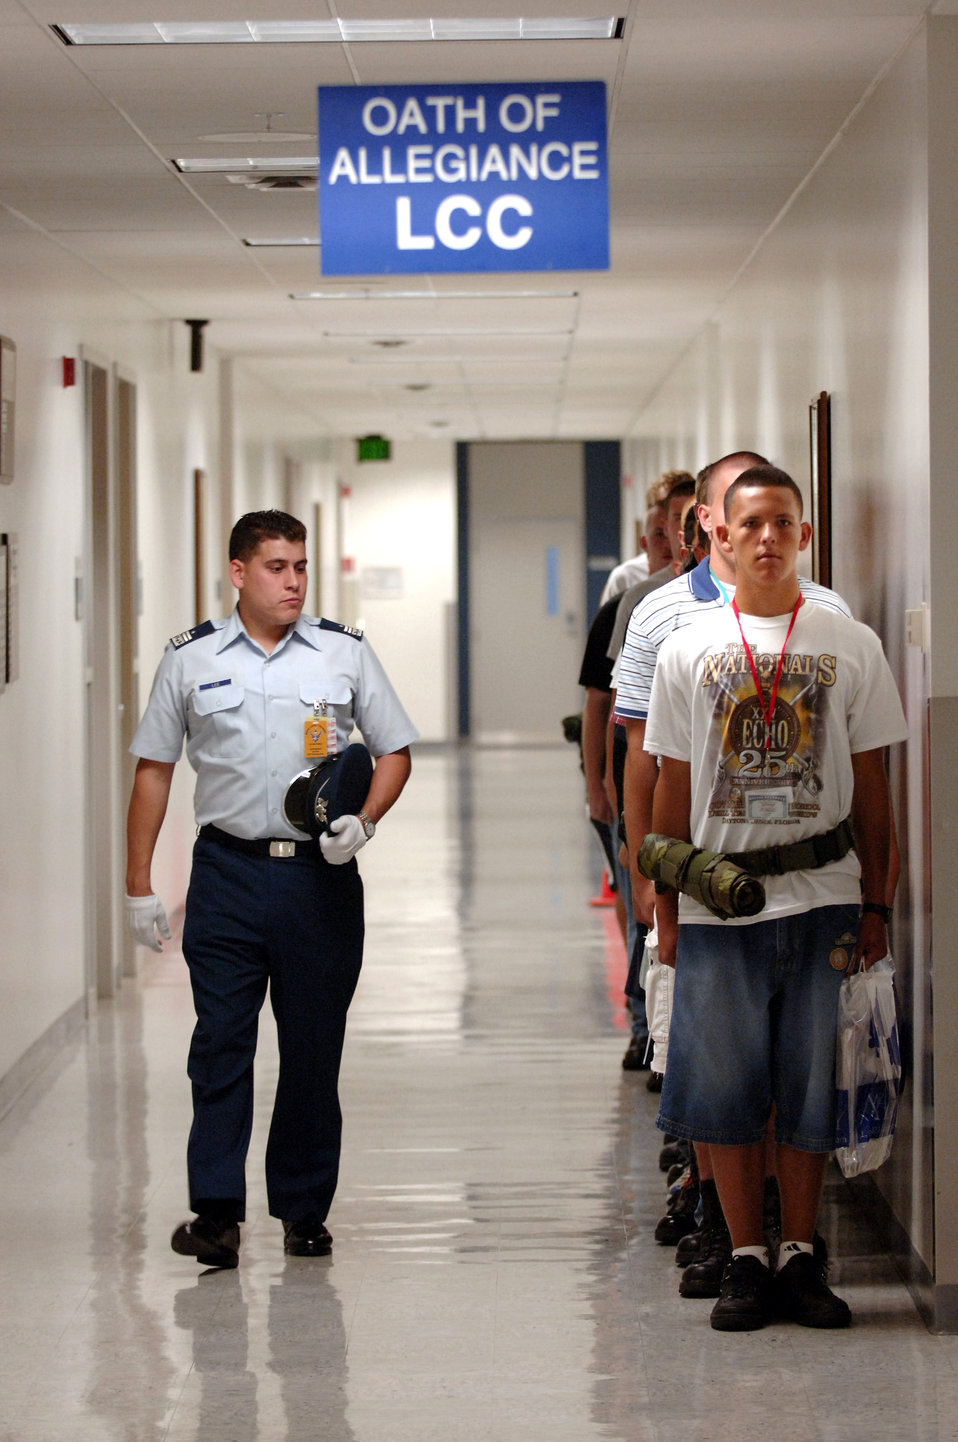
Welcome to the Air Force

Cadet 1st Class Nicholas Lee provides motivational training as basic cadet trainee's form up to recieve the Oath of Allegiance during inprocessing of the Class of 2011 June 28 at the U.S. Air Force Academy in Colorado. The 1,304 members arrived June 28 to begin basic cadet training.